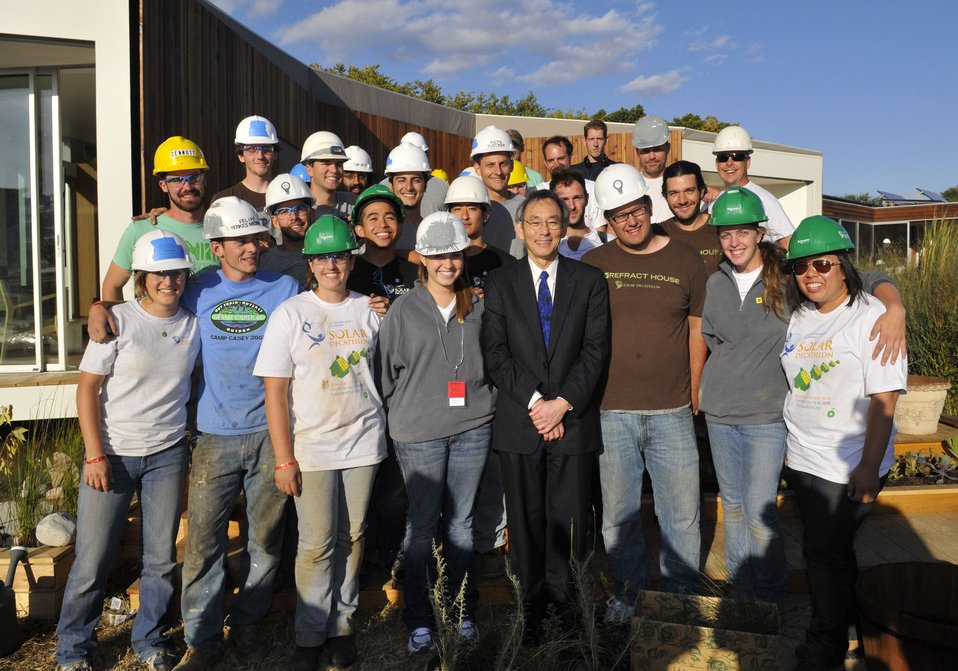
Solar Decathlon 2009 on the National Mall, with Sec. Chu

Solar Decathlon 09